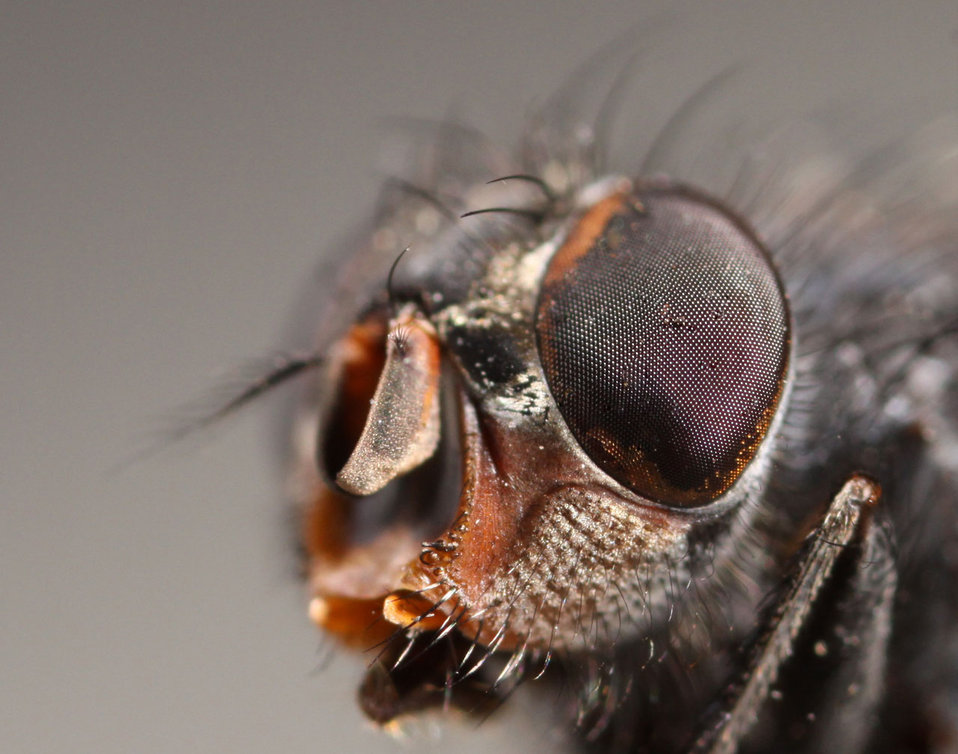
Fly face

My first insect photo with my new camera.